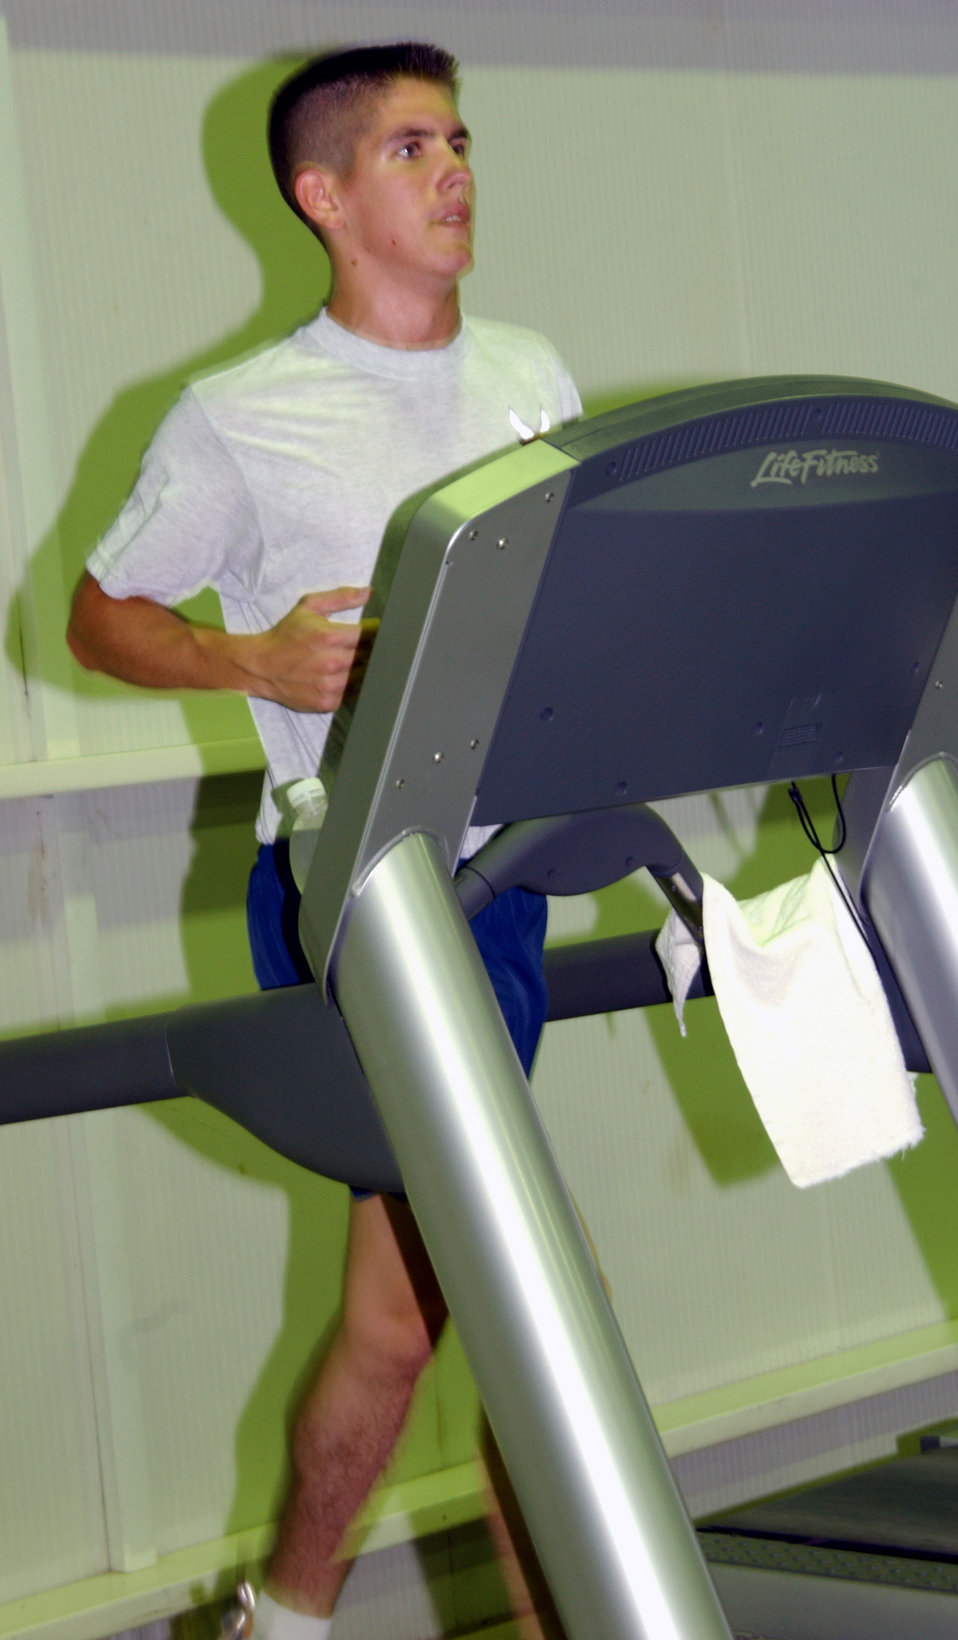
Balad medic takes 'fit-to-fight' to extremes for charity

Senior Airman Brendan Brustad practices at Balad Fitness Center for a 100-mile run scheduled for Arkansas October 6 to 7. Airman Brustad is a medical technician deployed with the 332nd Expeditionary Medical Group deployed in support of Operation Iraqi Freedom from Altus Air Force Base, Okla.